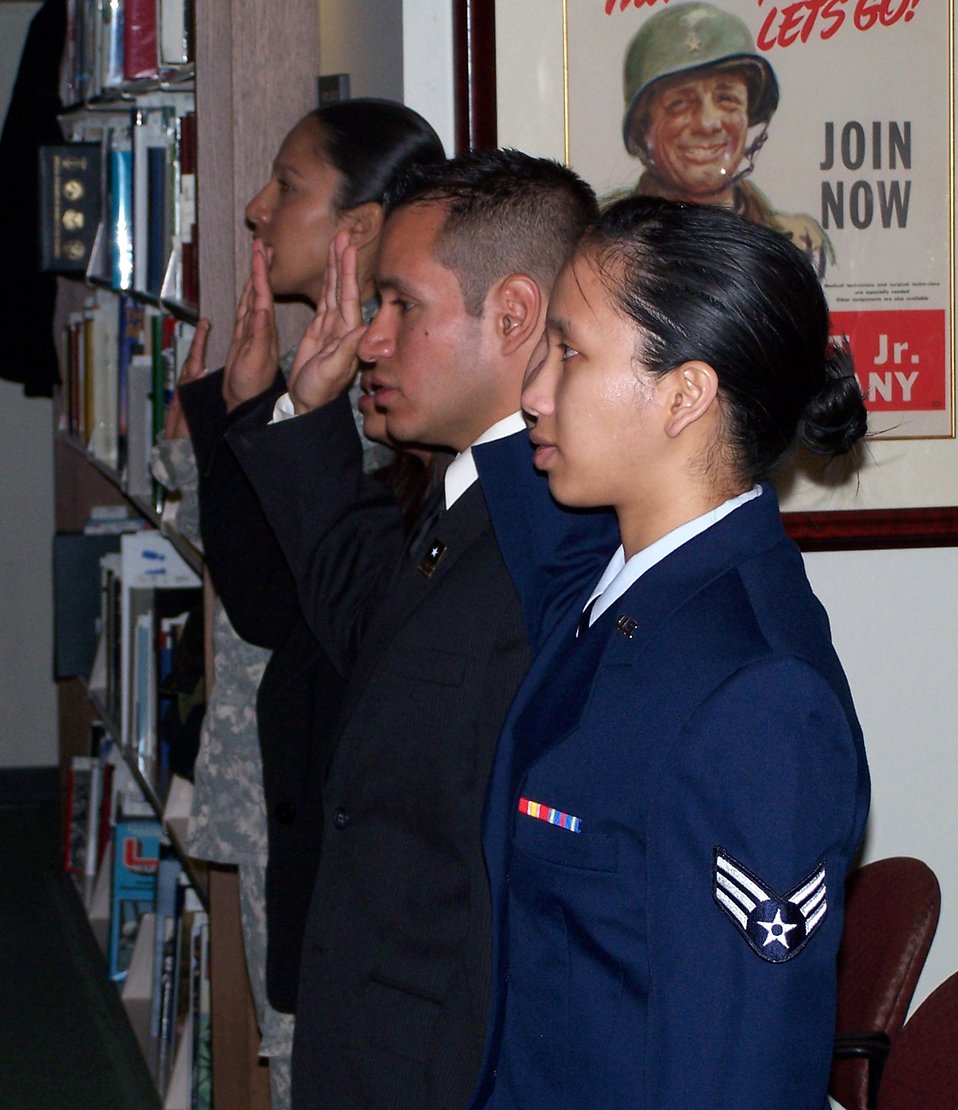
30 servicemembers become citizens

Senior Airman Katherine Collantes takes the Oath of Allegiance during the U.S. Citizenship and Immigration Services Naturalization Ceremony at the Pritzker Military Library in Chicago. Airman Collantes is assigned to the 434th Air Refueling Wing, Grissom Air Reserve Base, Ind. Brig. Gen. Darren McDew, director of public affairs, Office of the Secretary of the Air Force, was the keynote speaker.